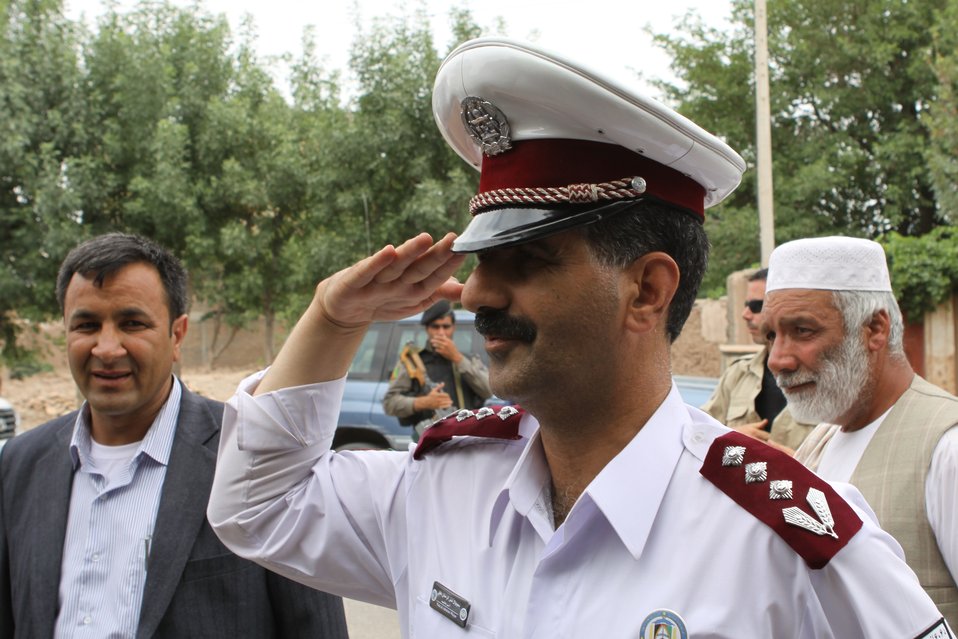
100525 Hirat Marble Conference 708